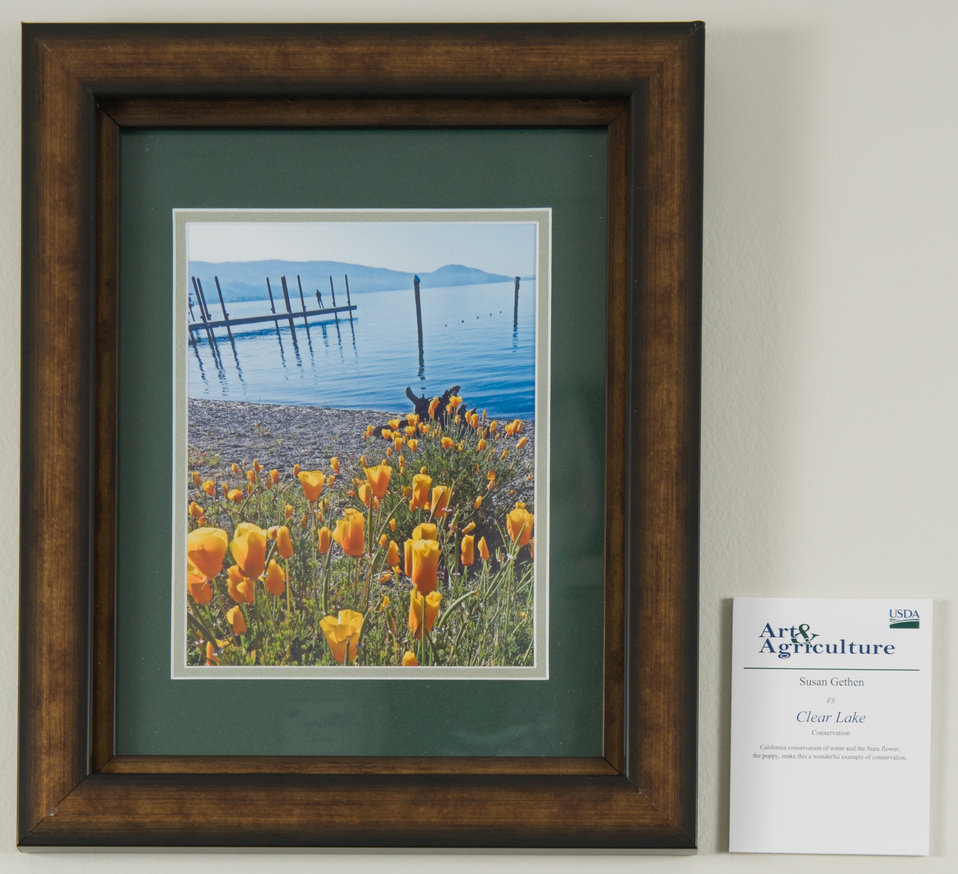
Online Viewer's Choice entries of the 2013 Art & Agriculture, Tuesday, July 9, 2013, in the South Building, Washington, D.C. Themes were expressed by employees from across the department and the contest was open to full-time and part-time USDA employees. Winning artwork will be displayed till the end of the year. U.S. Artistic expression is a creative outlet that is vital for an individual to grow and develop.